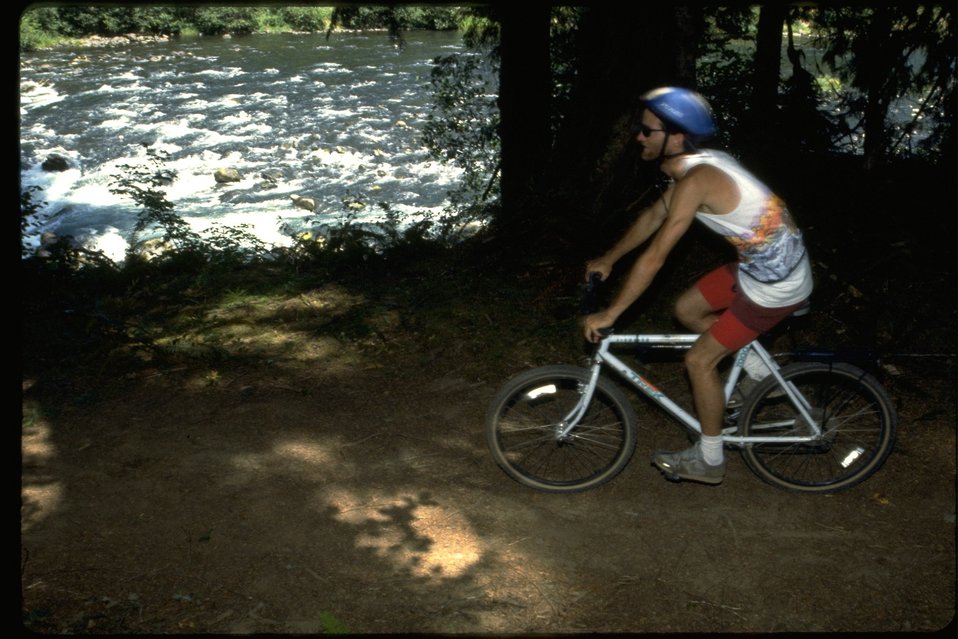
Bicycling along a river.